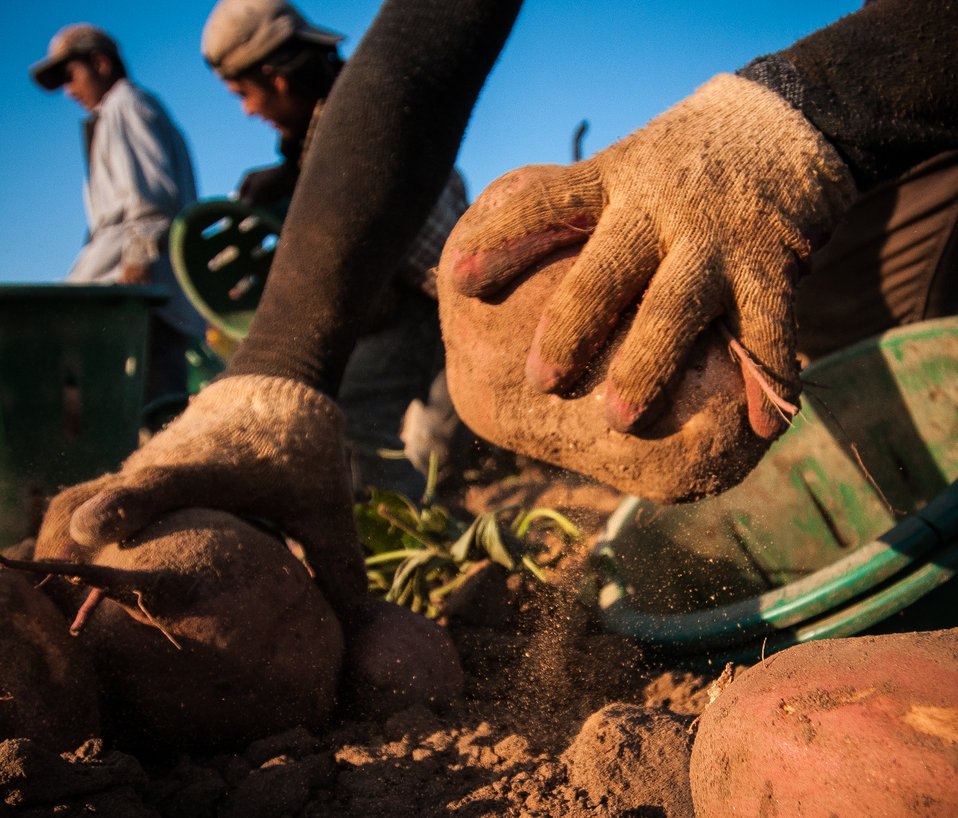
Migrant workers carefully lift large sweet potatoes as they pick and sort according the potatoes to size at Kirby Farms in Mechanicsville, VA on Sep. 20, 2013. Fresh from the ground the red skin is easily marred (light spot) and hand picking helps keep them looking good. Kirby Farms is a third-generation family farm that covers 500 acres, and generates produce and grains on a year-around operation. Please see the photoset description for more information about this harvest.